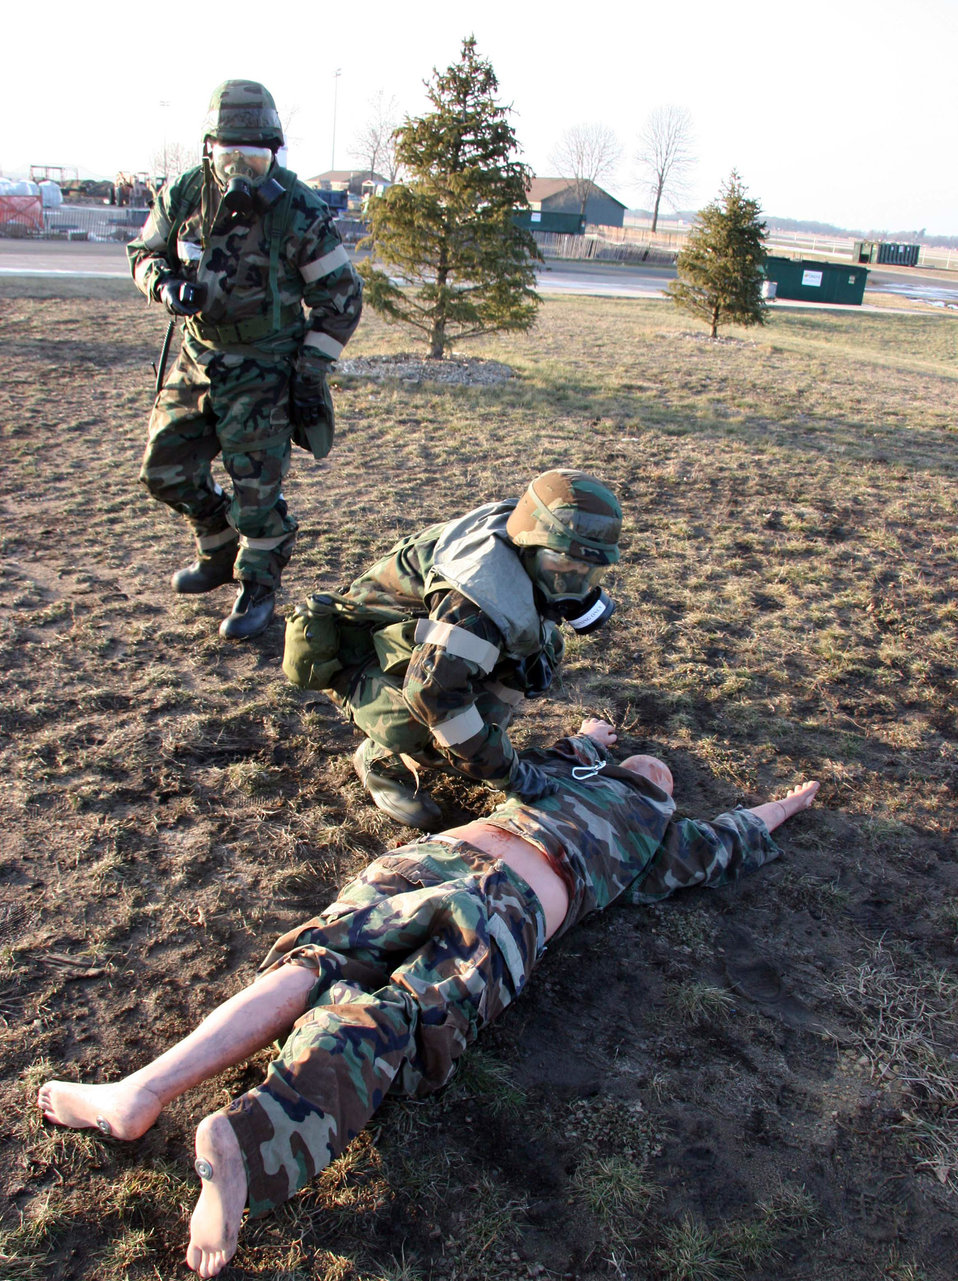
Litter team

VOLK FIELD AIR NATIONAL GUARD BASE, Wis. (AFPN) -- After a simulated attack, Master Sgt. Robert Shulman and Airman Nicole Lejeune help a